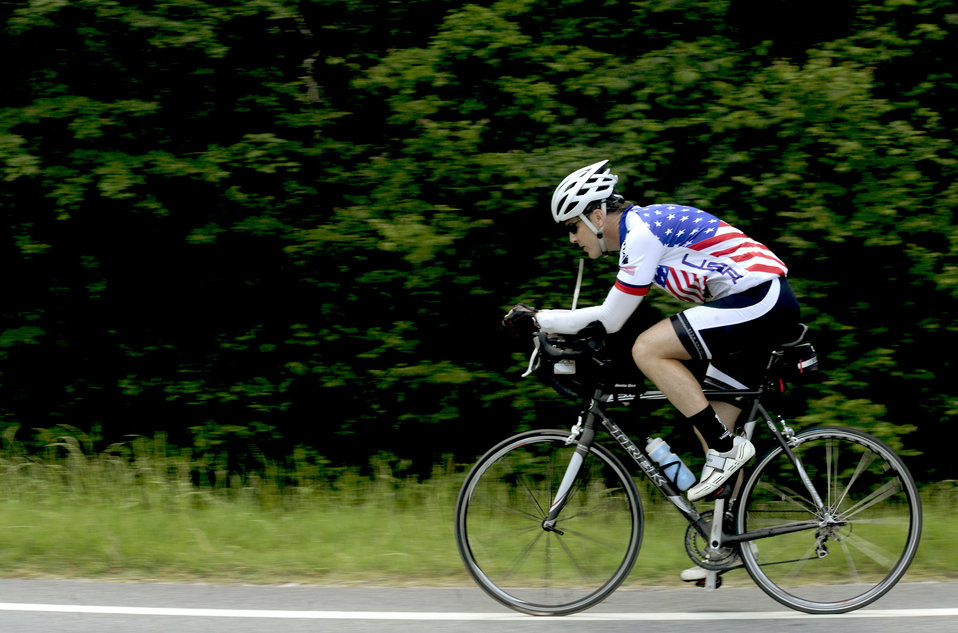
Jason Rogers, an Air Force veteran, rides his bicycle May 2, 2011, through Hahira, Ga. Mr. Rogers rode his bicycle 2,500 miles across the U.S., to raise money for the Wounded Warrior Project.